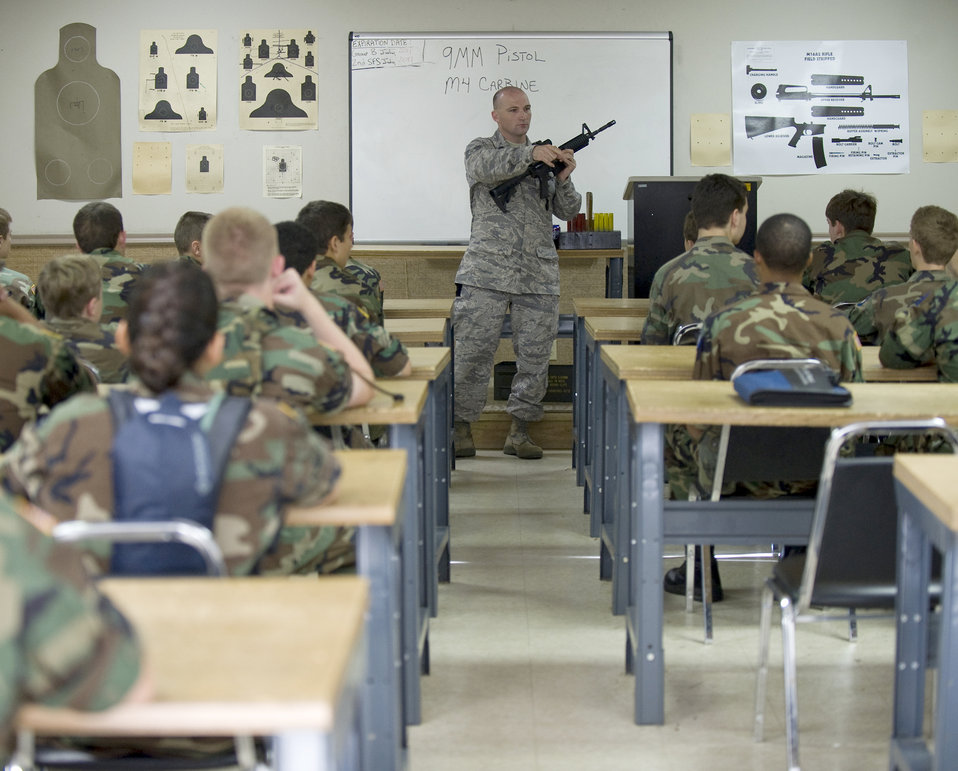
Barksdale hosts CAP Cadet Encampment

Tech. Sgt. Lee Thompson briefs several Civil Air Patrol cadets on the capabilities of the M-4 carbine rifle during a weapons demonstration July 22, 2010, at Barksdale Air Force Base, La. The course was part of the annual CAP Louisiana Wing Cadet Encampment held here July 15 through 25. Sergeant Thompson is with the 2nd Security Forces Squadron.